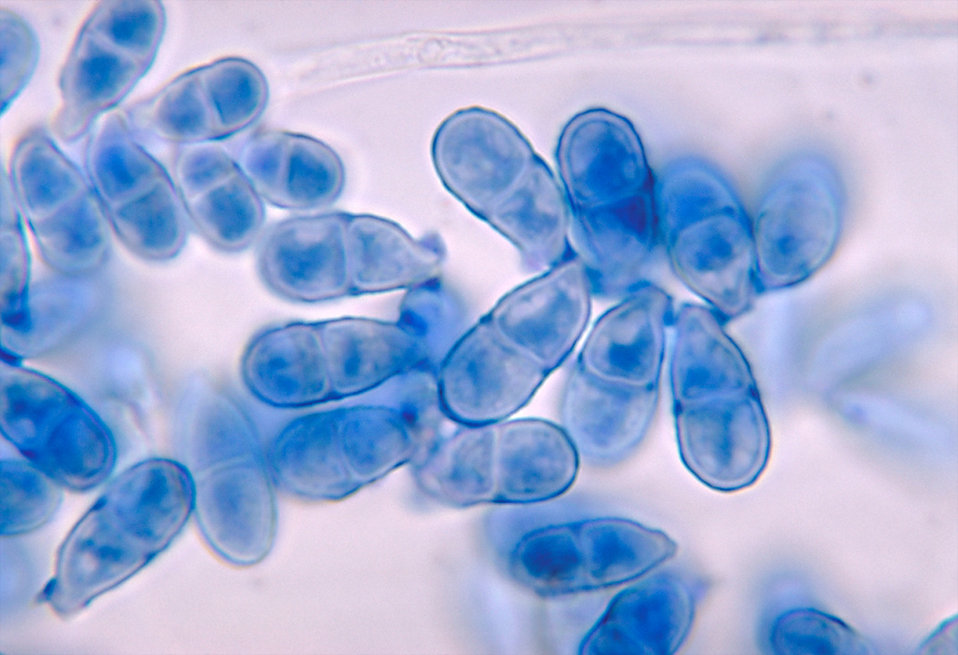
These are conidia of the fungus Trichothecium roseum, the only species included in this genus.